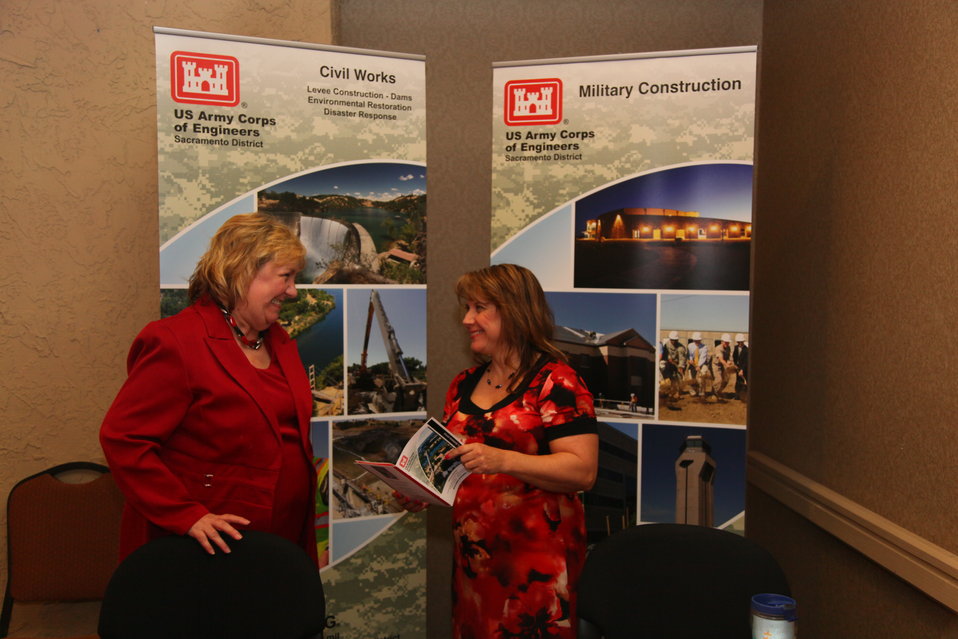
Water conference offers solutions for managing California’s complex water issues

Denise Garcia (left) and Michelle Stratton, with the U.S. Army Corps of Engineers Sacramento District’s small business office, provided outreach information at the Corps’ display during the Society of American Military Engineers’ Water Conference in Sacramento, Calif., Oct. 4, 2011. The conference offered a venue for exchanging ideas and forming partnerships for dealing with complex California water issues ranging from water quality to unpredictable flooding events.